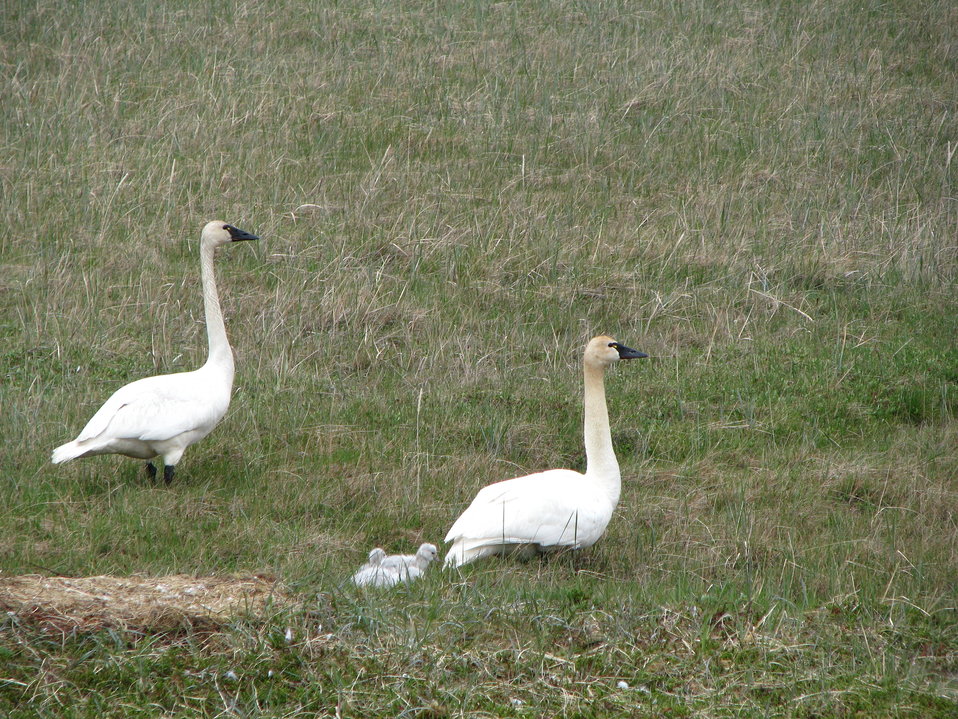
Tundra swan family

Yukon Delta NWR